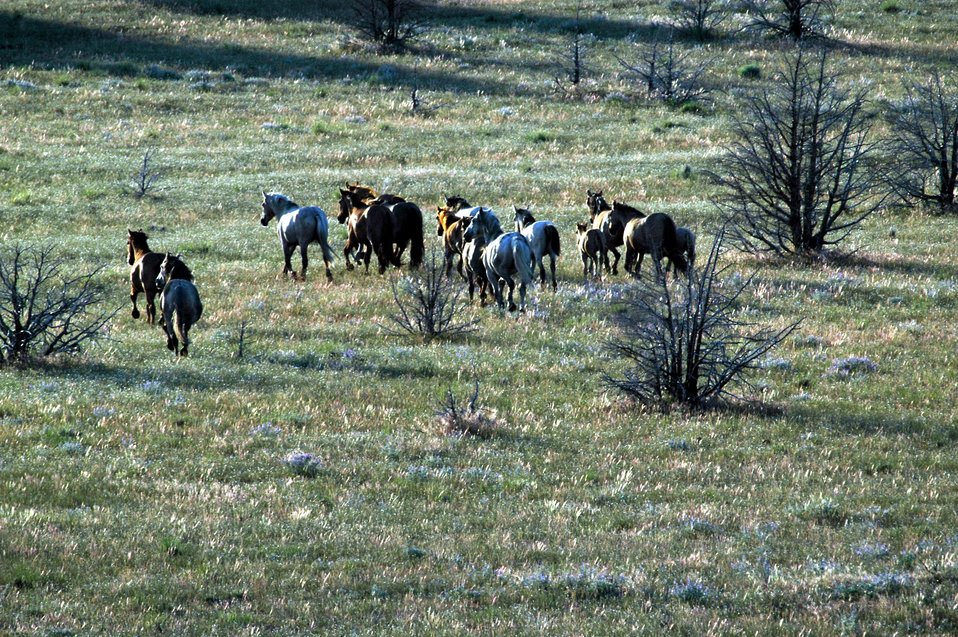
Kiger horses roam the plateaus of the Kiger Wildhorse Herd Management Area near Steens Mountain in Southeastern Oregon.